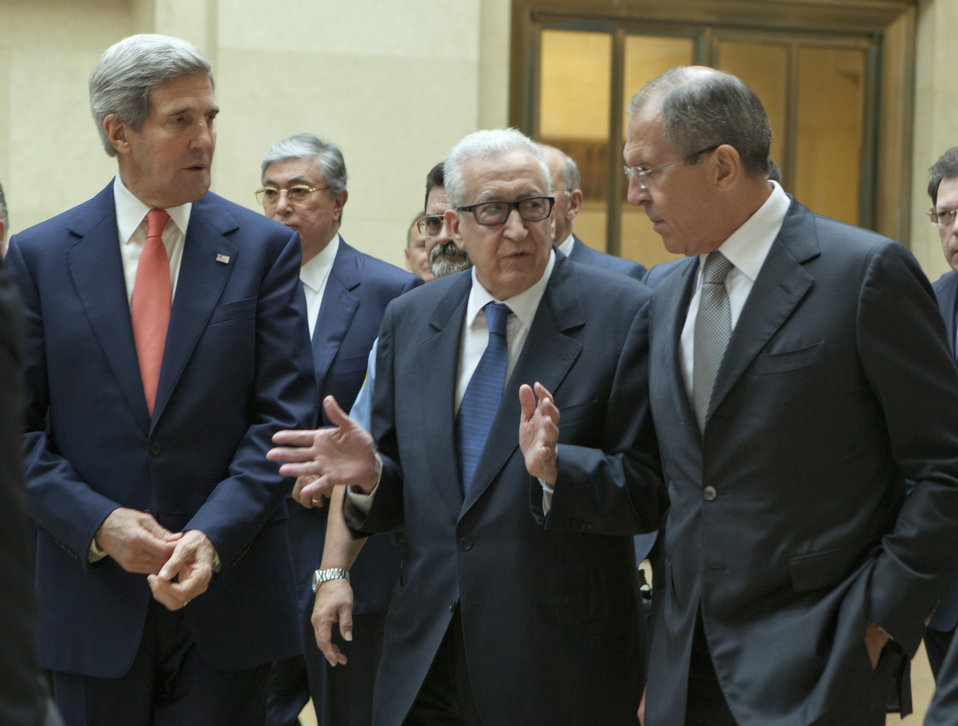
Secretary Kerry, Russian Foreign Minister Lavrov, UN Special Envoy Brahimi Walk Through UN Headquarters

U.S. Secretary of State John Kerry, United National Special Envoy for Syria Lakhdar Brahimi, and Russian Foreign Minister Sergey Lavrov walk through UN Headquarters in Geneva after a news conference on September 13, 2013.